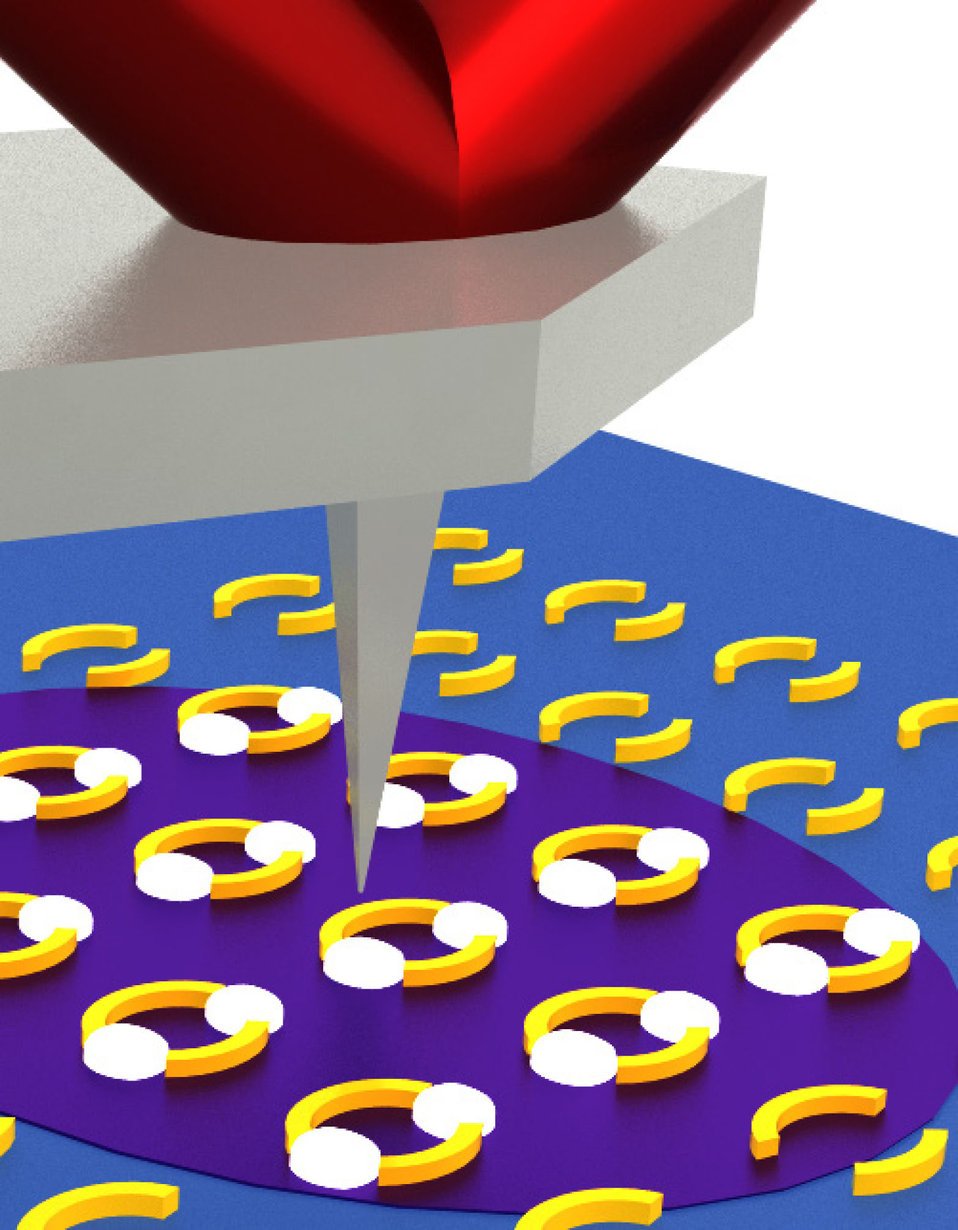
Nanoscale Plasmonic Resonator Structures

Infrared laser light (purple) from below a sample (blue) excites ring shaped nanoscale plasmonic resonator structures (gold). Hot spots (white) form in the rings' gaps. In these hot spots, infrared absorption is enhanced, allowing for more sensitive chemical recognition. A scanning AFM tip detects the expansion of the underlying material in response to absorption of infrared light.